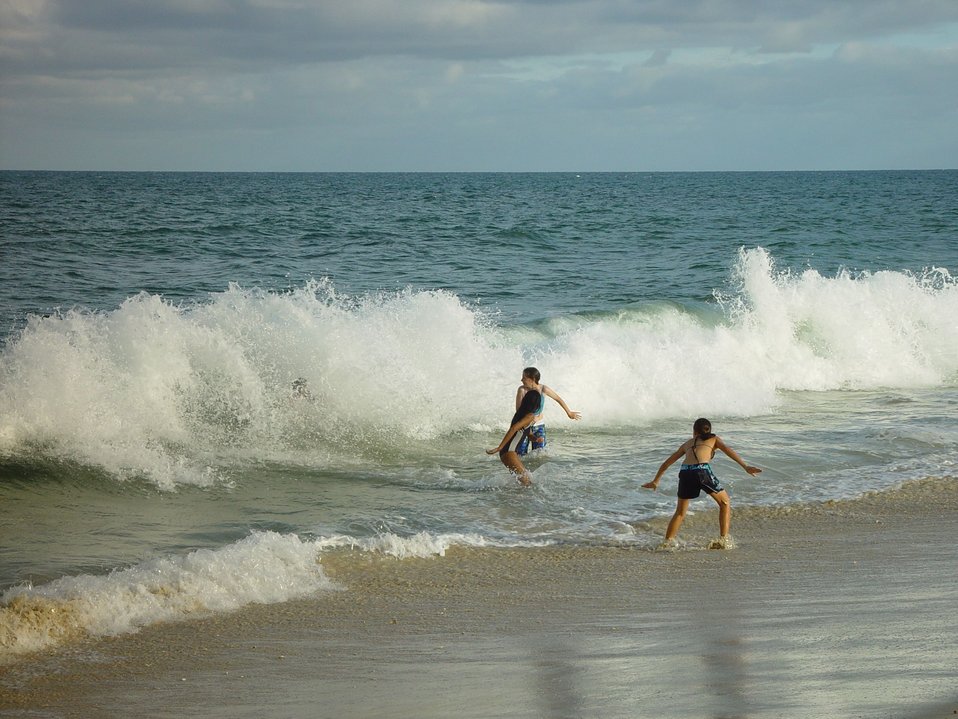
English:
Image title: Swimming at beach Image from Public domain images website, http://www.public-domain-image.com/full-image/nature-landscapes-public-domain-images-pictures/beaches-public-domain-images-pictures/swimming-at-beach.jpg.html